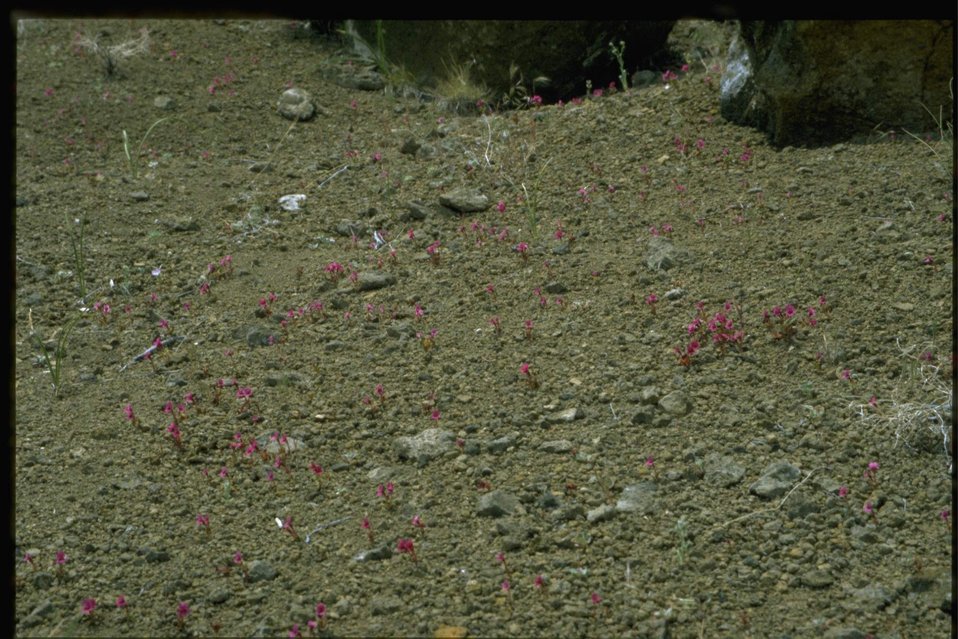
Far shot of Cusick's monkey flower, Minulus cusickii.